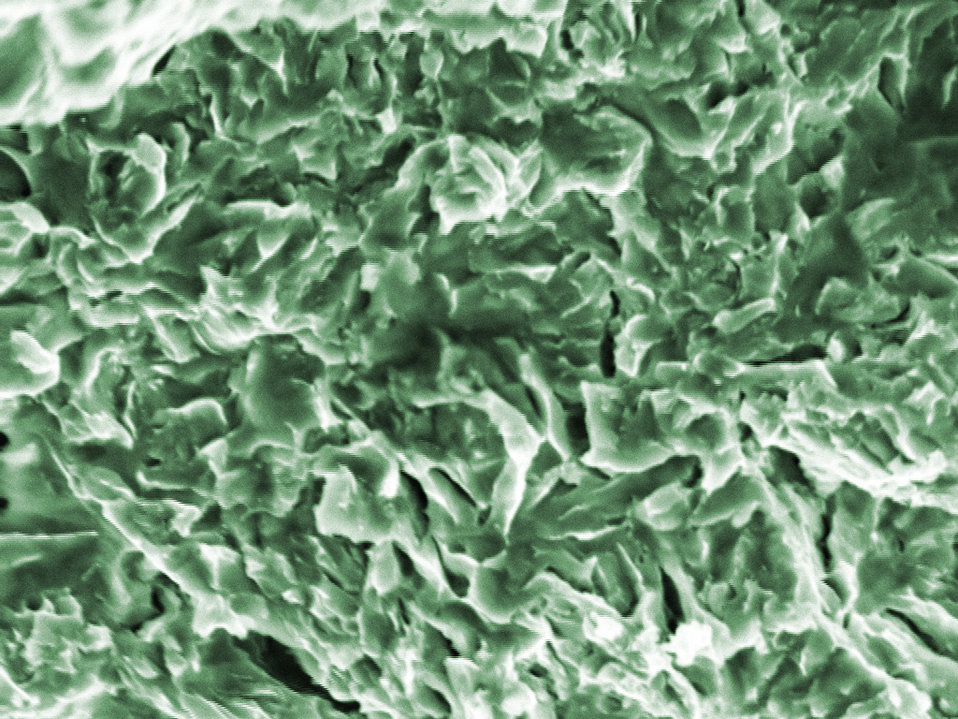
Cleavage failure in pipeline steel

Scanning electron microscope images of a test section of X100 alloy pipeline steel shows the effects of a hydrogen-induced crack at the surface. Image shows an area roughly 21.5 micrometers across. Color added for clarity.